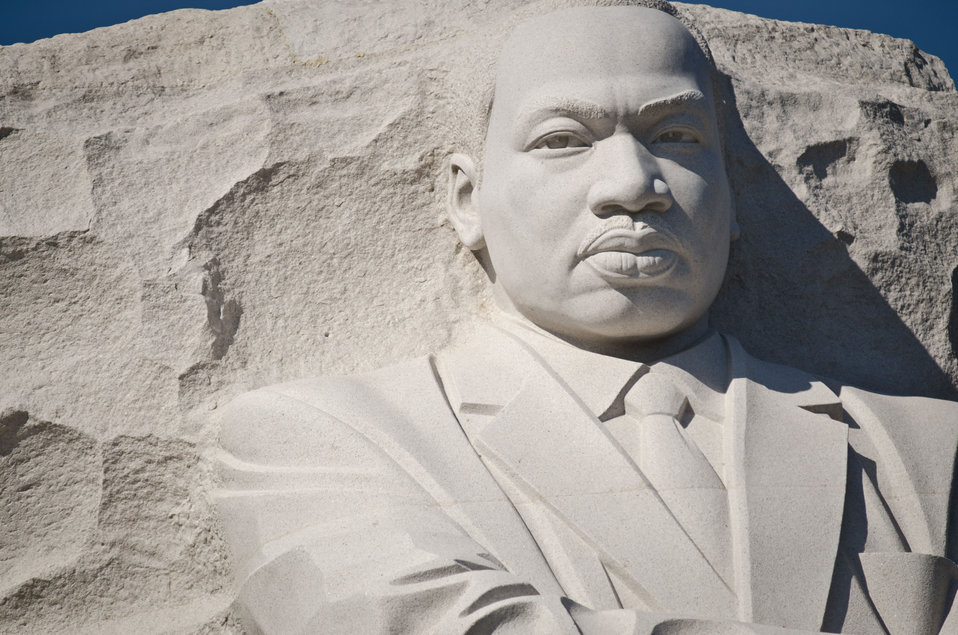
Martin Luther King, Jr. Memorial in Washington, DC, on Saturday, October 8, 2011.